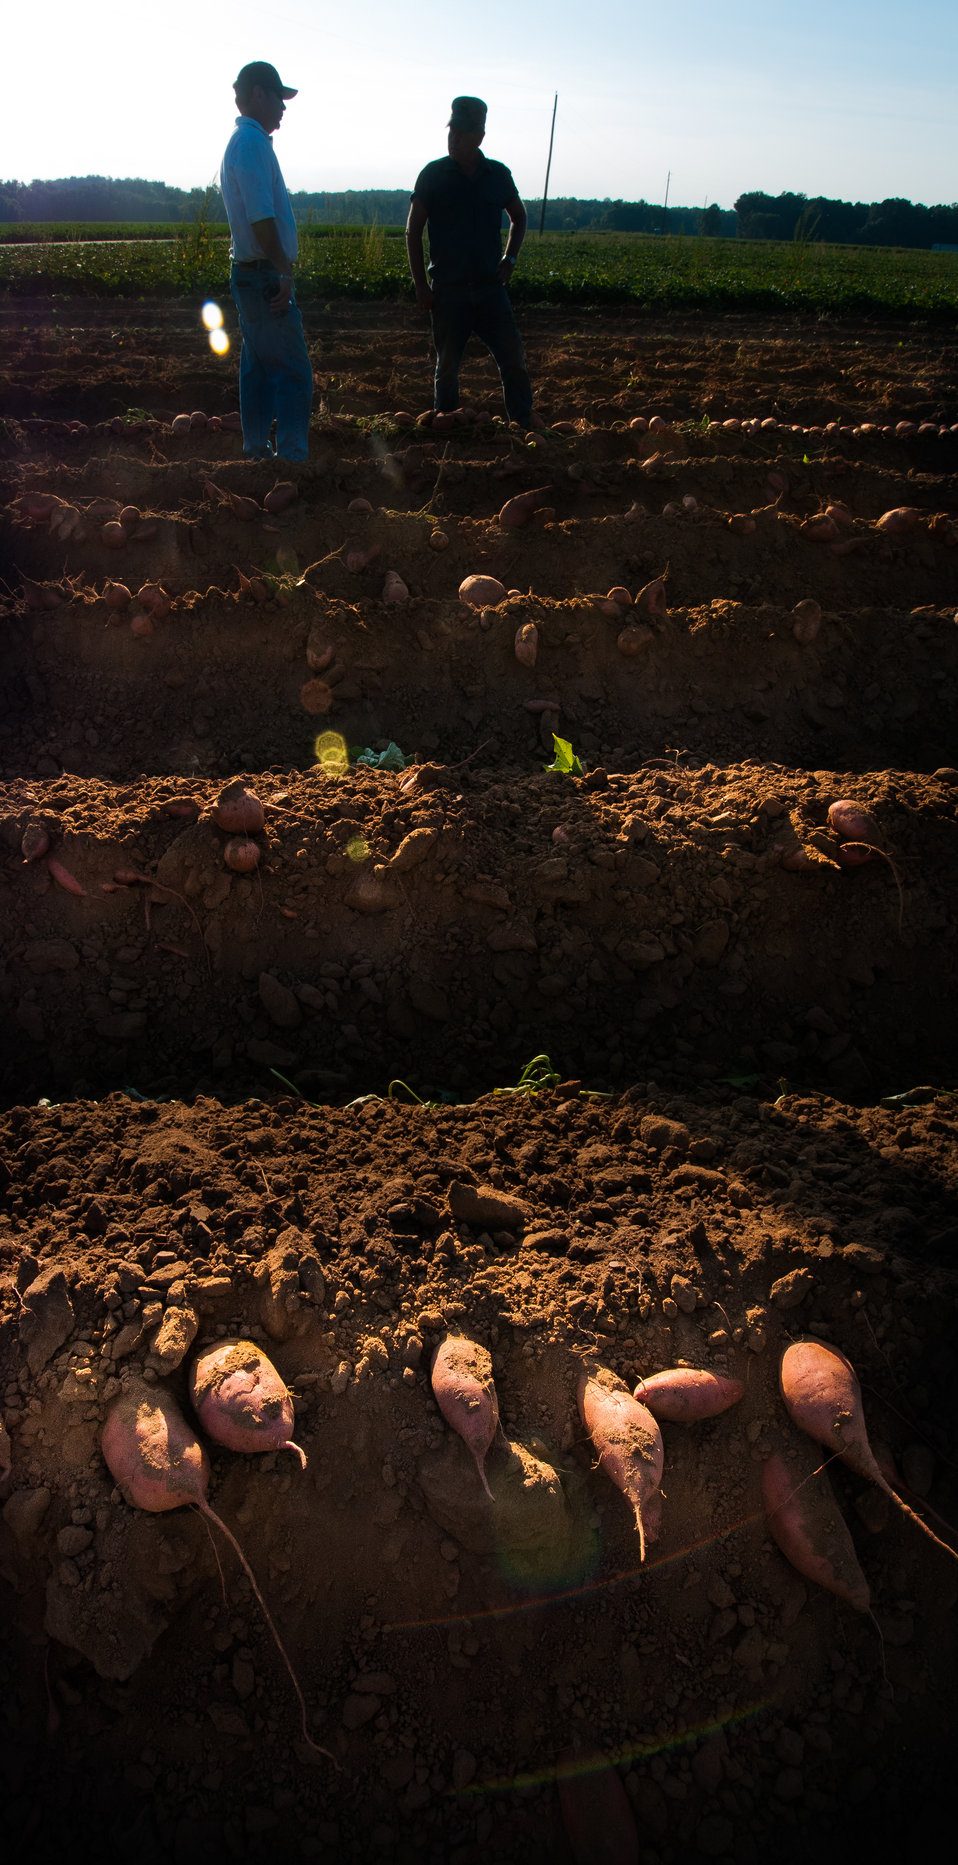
Large sweet potatoes are harvested at Kirby Farms in Mechanicsville, VA on Sep. 20, 2013. Kirby Farms is a third-generation family farm that covers 500 acres, and generates produce and grains on a year-around operation. Please see the photoset description for more information about this farm operation.